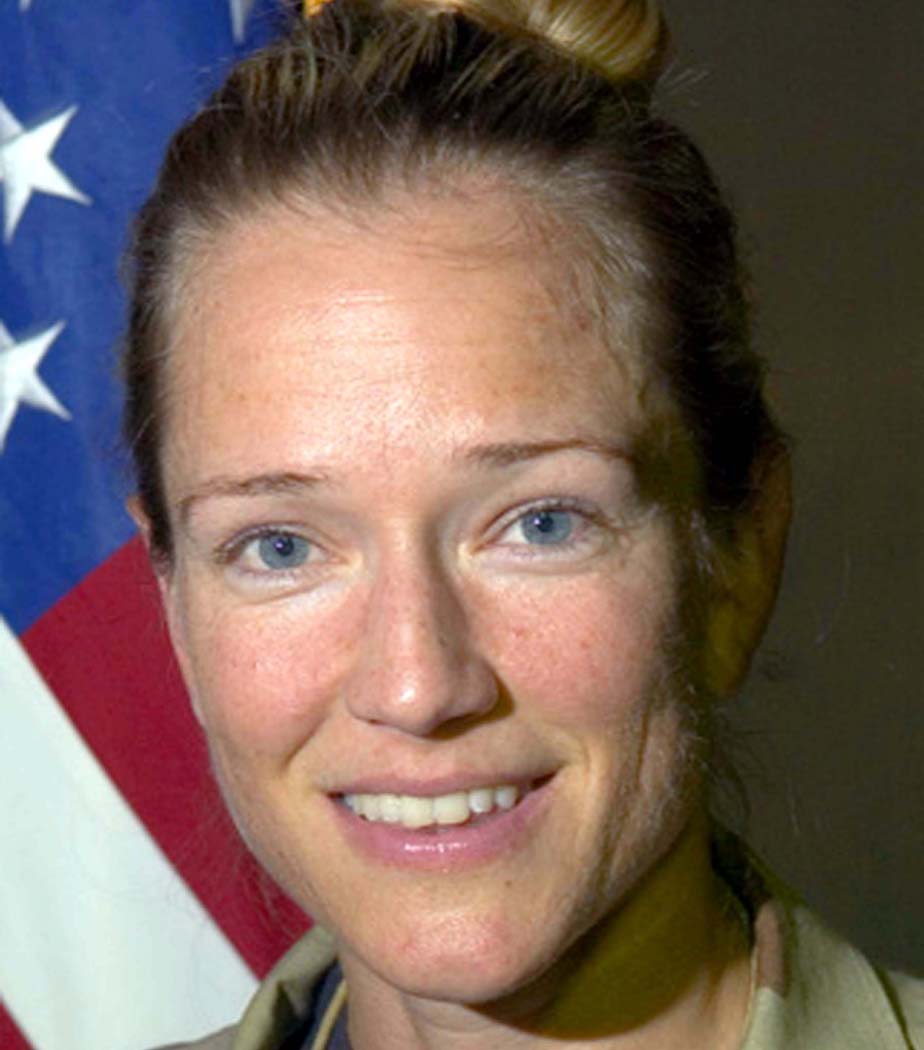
Missing major is found safe

Maj. Jill Metzger